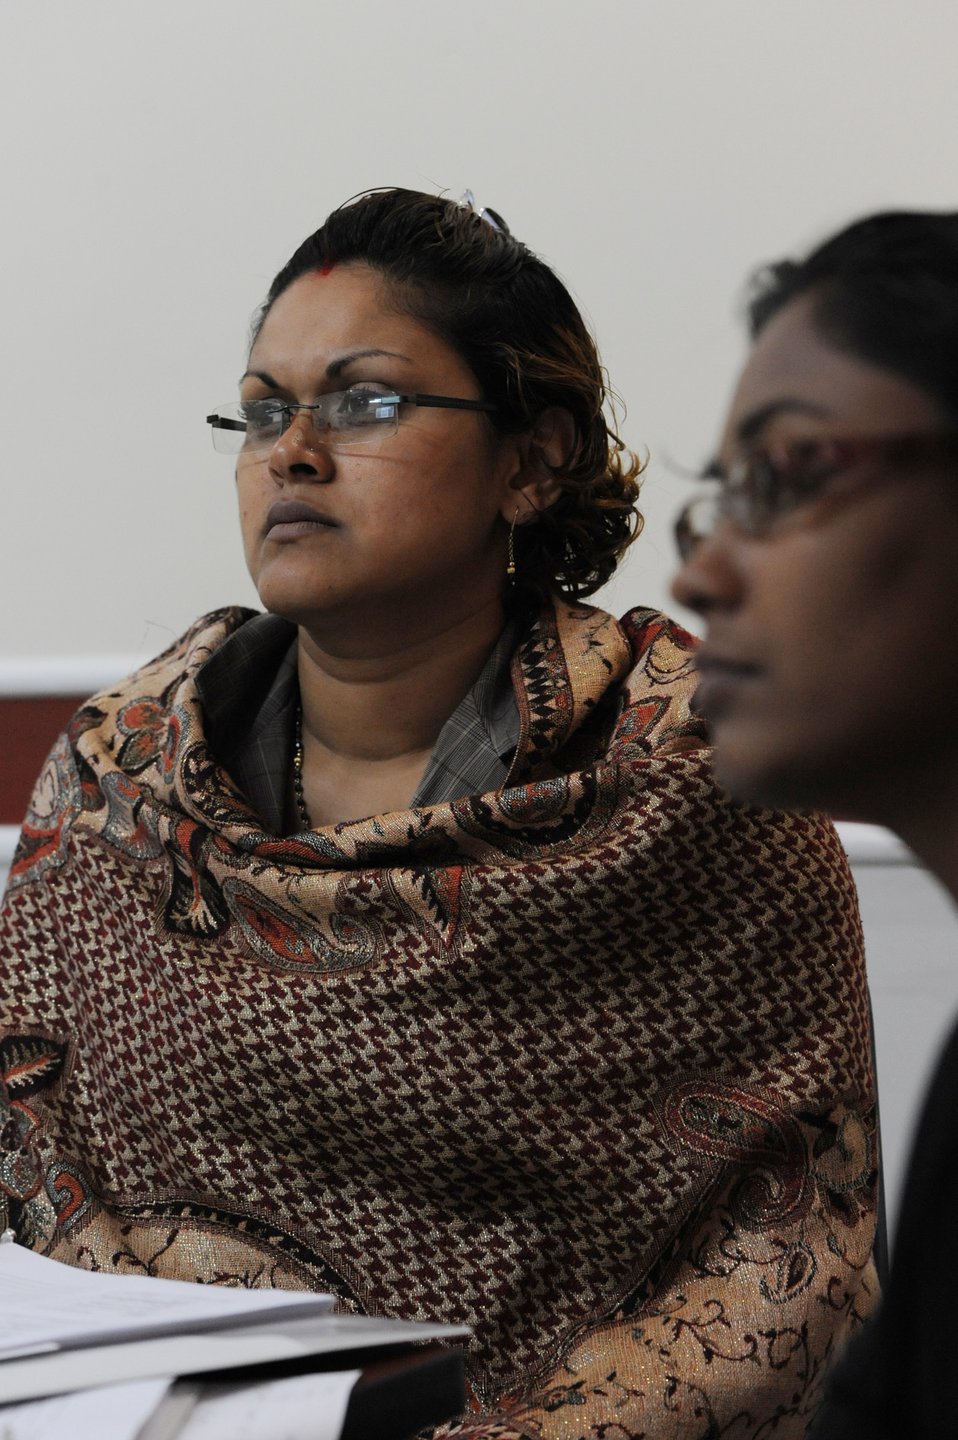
DIMO

Christina Siew attends a disaster planning and mass casualty response class for primary care providers July 20, 2010, in Port of Spain, Trinidad and Tobago. The class is taught by the Defense Institute for Medical Operations, United States Air Force School of Aerospace Medicine, at Brooks City-Base, Texas. Christina Siew works for Trinidad and Tobago's Northwest Regional Health Authority.